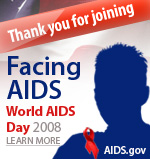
thank you for facingaids male2